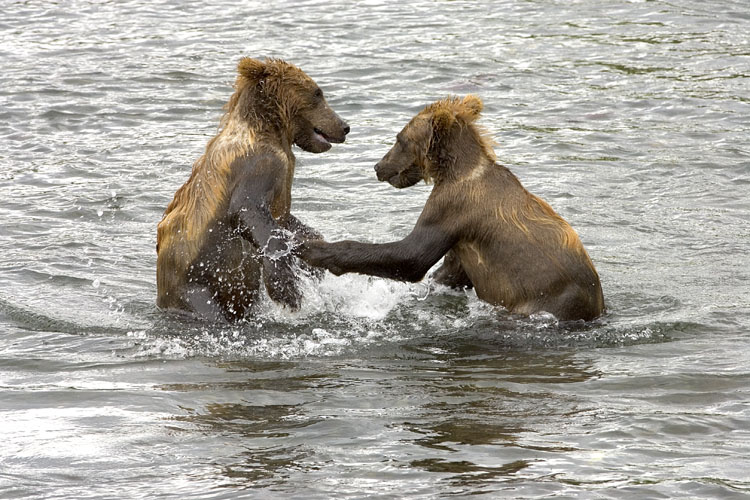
KOD Hildebrand (29)

Kodiak National Wildlife Refuge- Wildlife